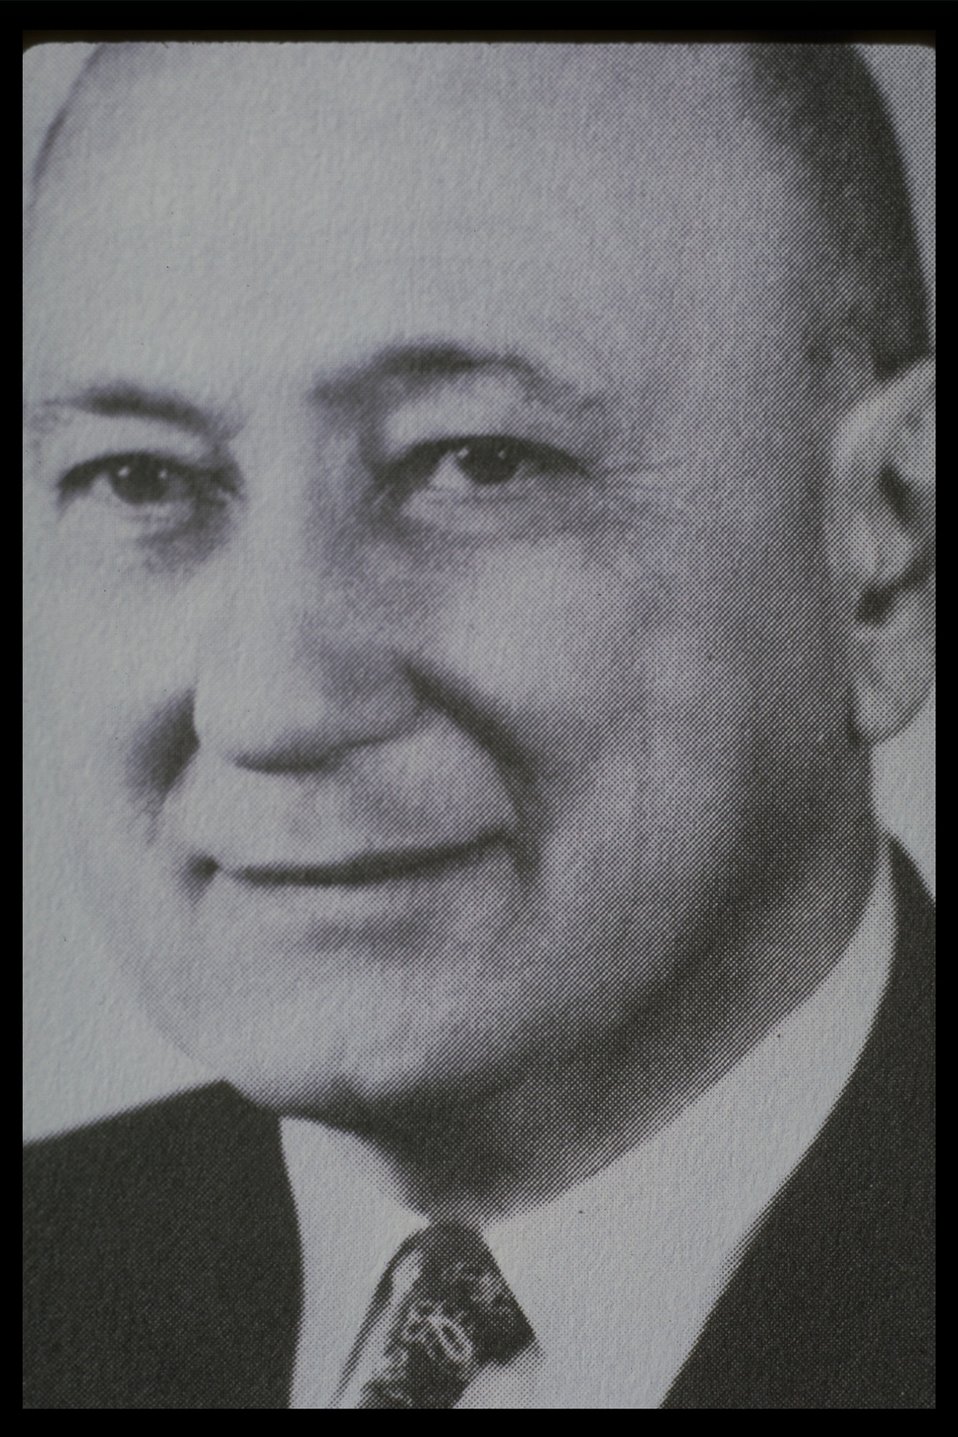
Black and White photo of possibly an old state director of the BLM.